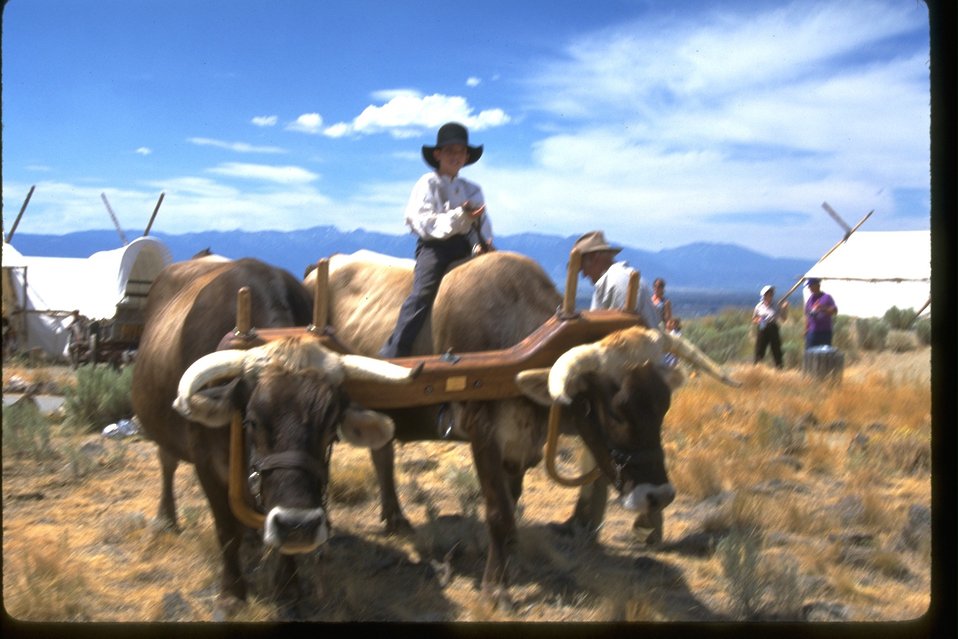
Pioneer Festival Scene with oxen and buy at the NHOTIC.